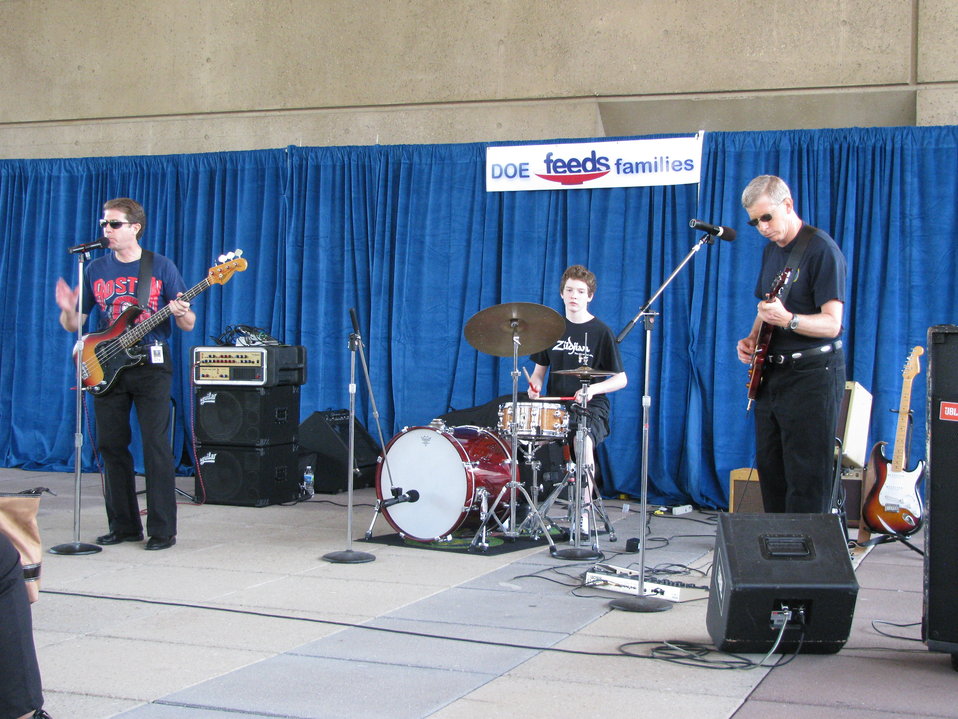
Deputy Secretary Daniel Poneman, and son, in the band 'Yellow Cake'